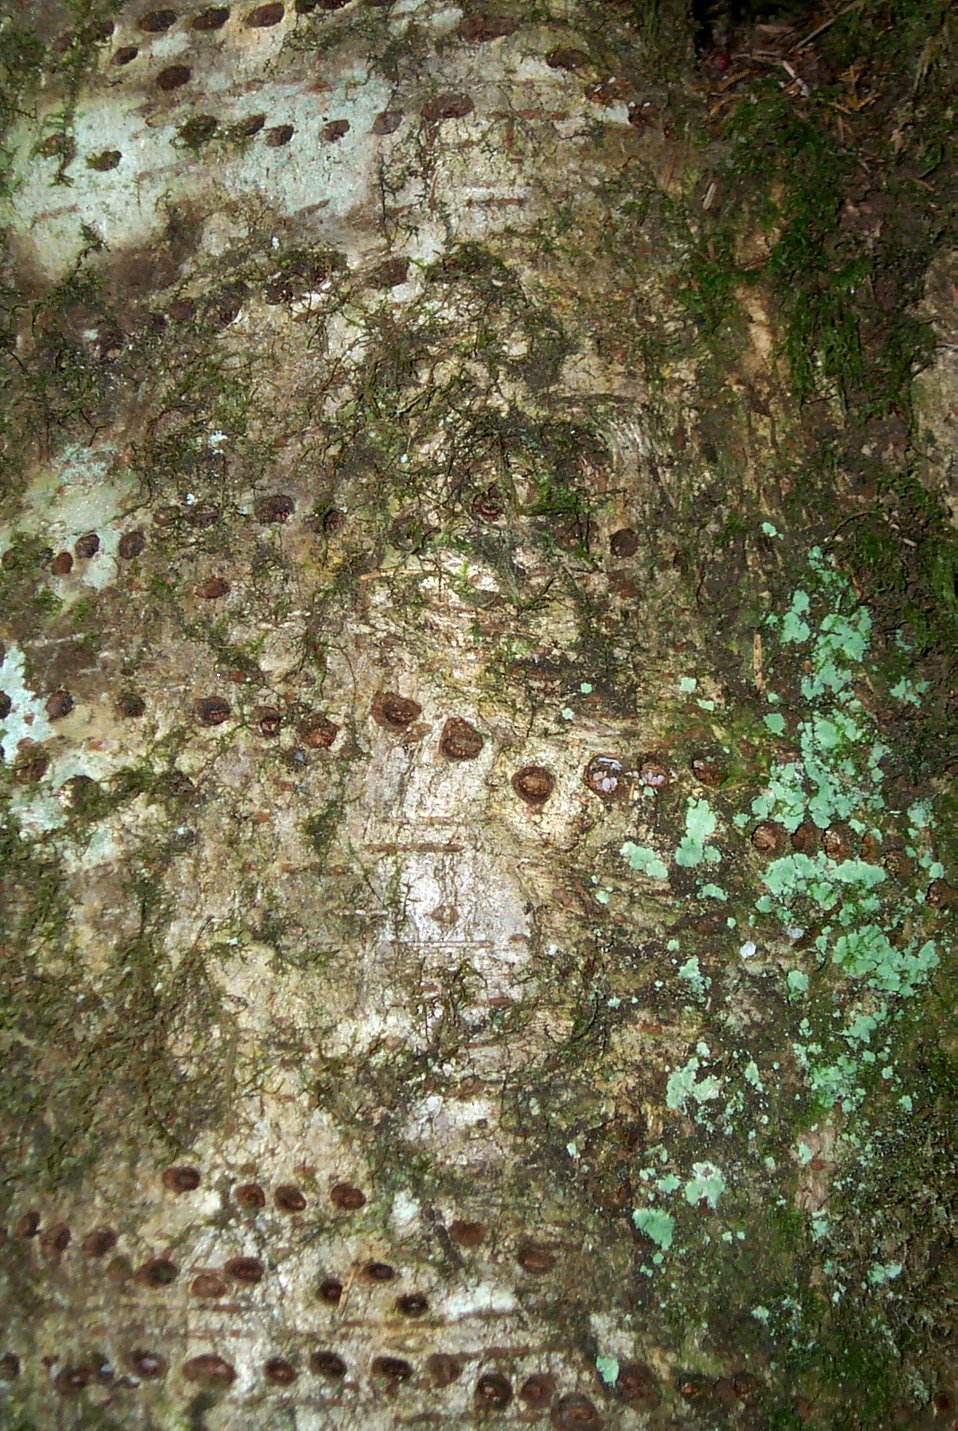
Lichen and other patterns on an alder tree on the Oregon coast.